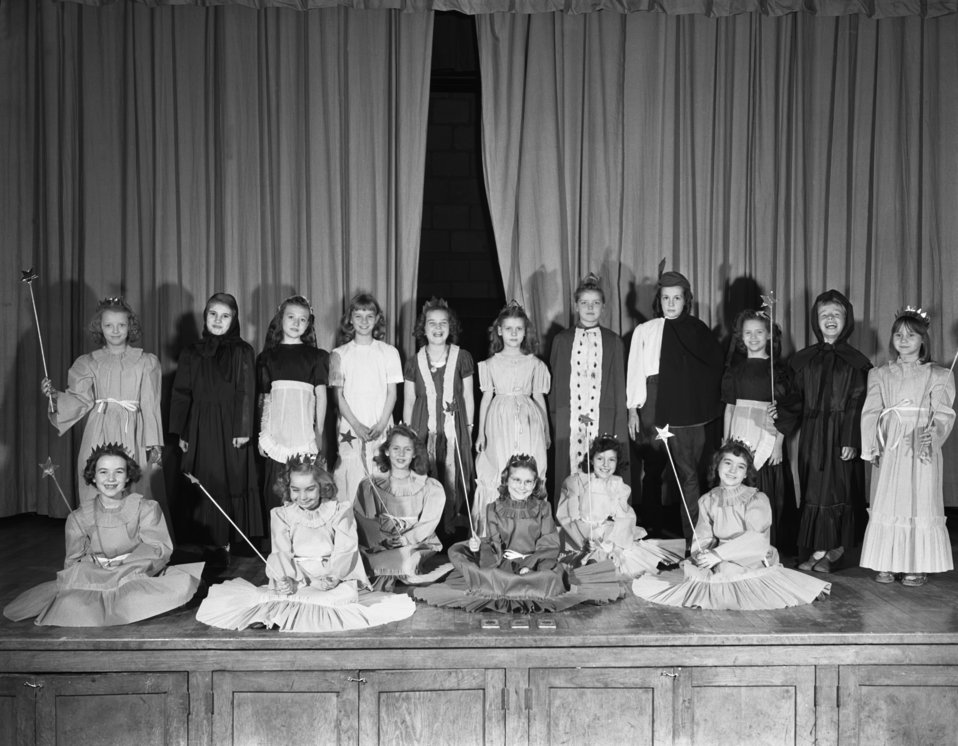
Glenwood School G.S. Play Oak Ridge 1947

33222-2 DOE photo Ed Westcott 2-28-1947 Oak Ridge Tennessee